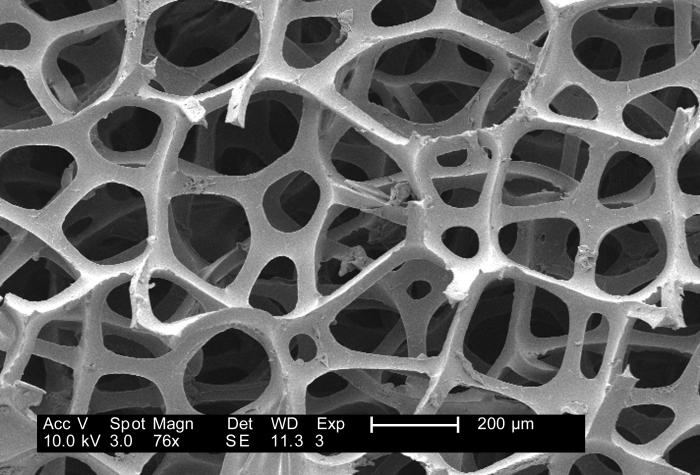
Under a low magnification of 76x, this 2007 scanning electron micrograph (SEM) depicted the fibrous configuration of a dry macrofoam sponge swabs. This swab, as well as three other materials, including polyester (see PHIL 9735), rayon (see PHIL 9734) and cotton (see PHIL 9732, and 9733), were scanned for a CDC study involving their efficiency in recovery of Bacillus anthracis bacterial spores from steel coupons that had been inoculated with a spore suspension of known concentration. See PHIL 9736, 9737, 9738, 9749, 9750, and 9751, for other views of this material. The article discussing the description of this swab material analysis, and the analytical results was published in 'Emerging Infectious Diseases', Vol. 10, No. 6, June, 2004, and was entitled, Swab Materials and Bacillus anthracis Spore Recovery from Nonporous Surfaces. A link to this article is found below.